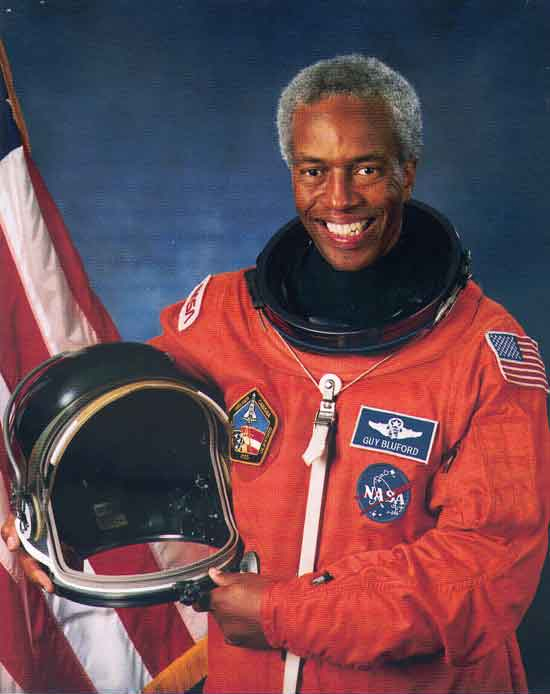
Colonel Guion S. Bluford Jr.

1970's -- Guion S. Bluford Jr. was the first African-American to be chosen as an NASA astronaut.